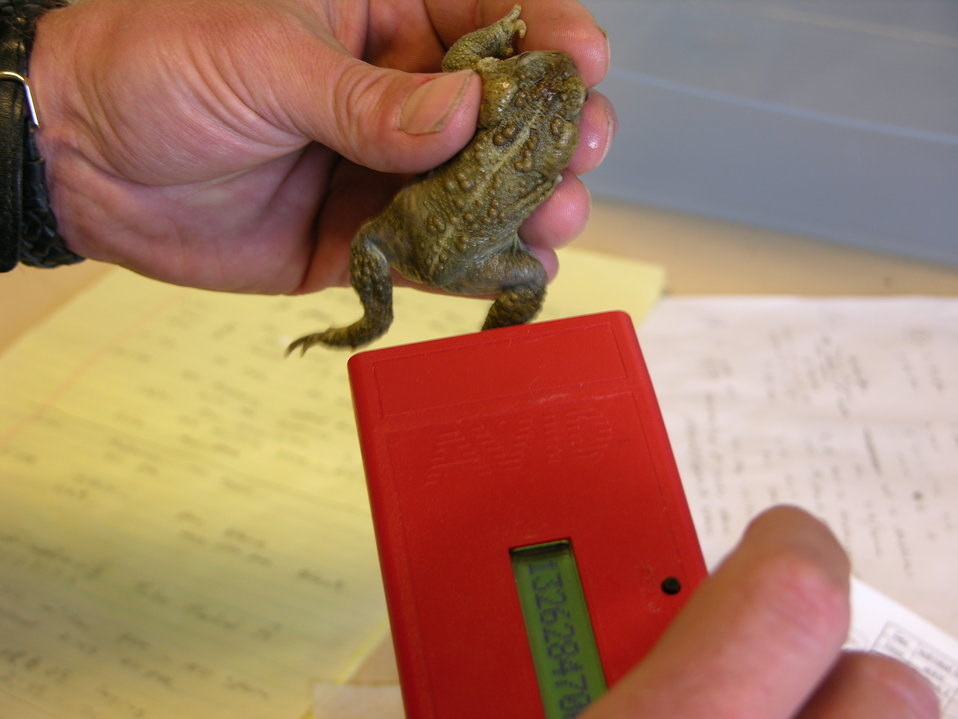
Wyoming Toad Pit Tagging

The toads are all given pit tags, this allows for the most genetically diverse breeding.